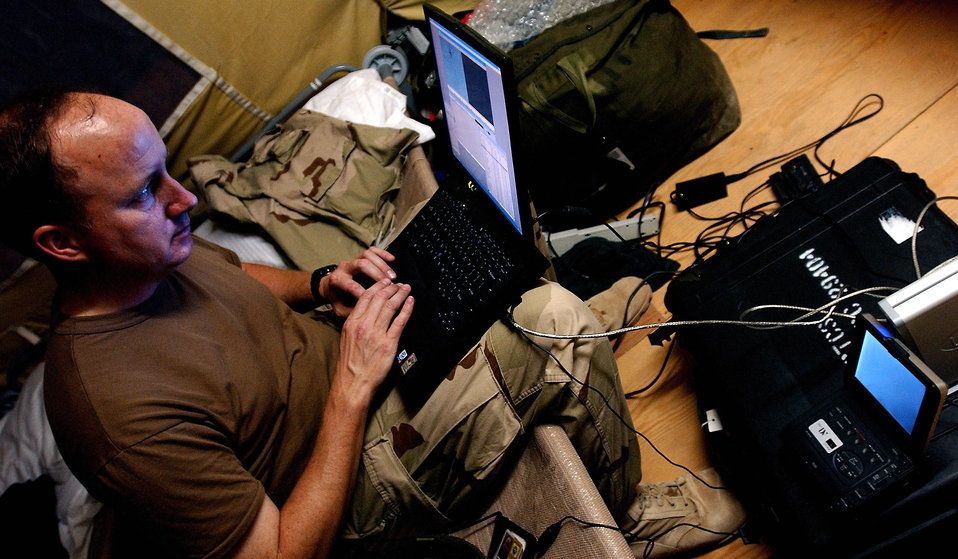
Horn of Africa

DJIBOUTI, Africa -- Master Sgt. Tom Donahoe, a videographer from the 1st Combat Camera Squadron deployed, edits a video in his tent of residence at Camp Lemonier after documenting operations from a Combined Joint Task Force, Horn of Africa mission on January 14, 2003. Combined Joint Task Force-Horn of Africa service members are deployed to Camp Lemonier here to combat terrorism in support of Operation Enduring Freedom.